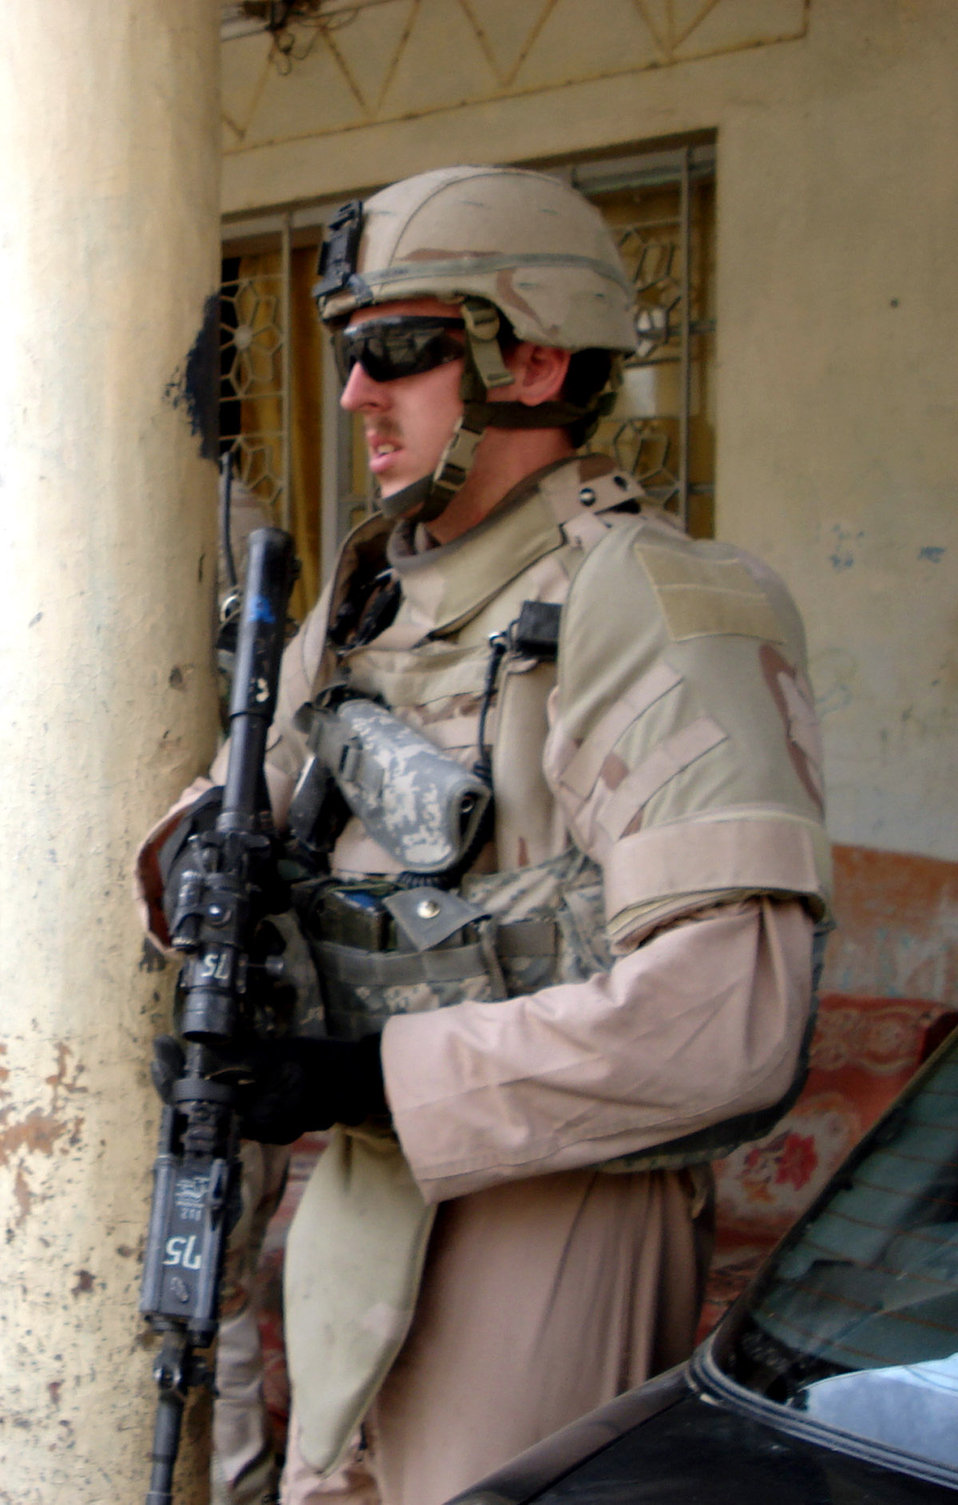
Balad Airmen say goodbye to fallen warrior

Staff Sgt. John T. Self lost his life May 14 while on his 79th combat patrol as a fire team leader assisting Iraqis taking back the streets of Baghdad. An improvised explosive device tore through his vehicle killing him and wounding three fellow Airmen on the patrol. Sergeant Self was assigned to Det. 3, 732nd Expeditionary Security Forces Squadron at Camp Liberty, Iraq.